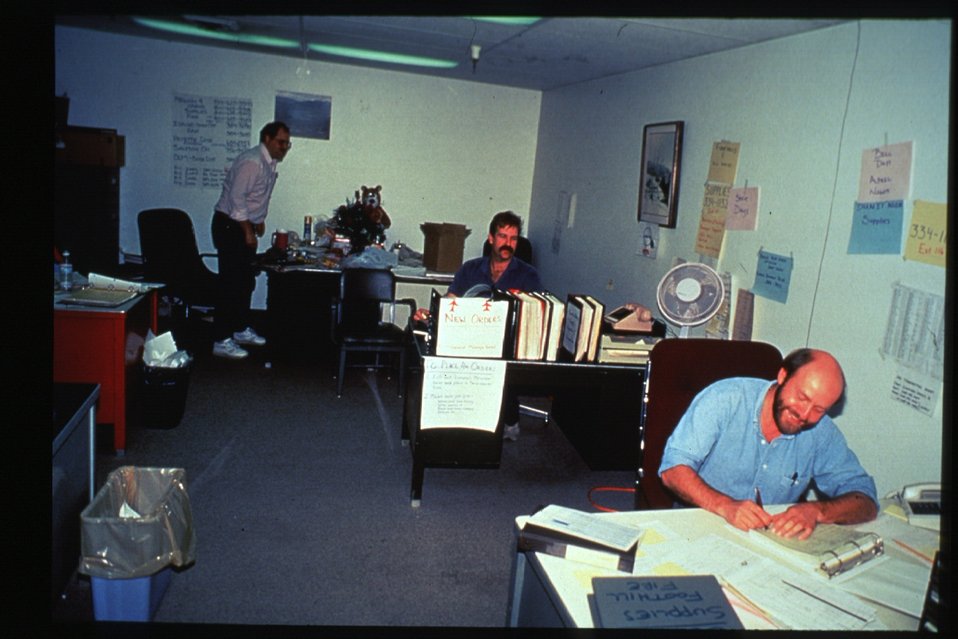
Boise Foothills Fire Danskin Mountains and South Fork of Boise River Office Four River Field Office LSRD Lower Snake River District